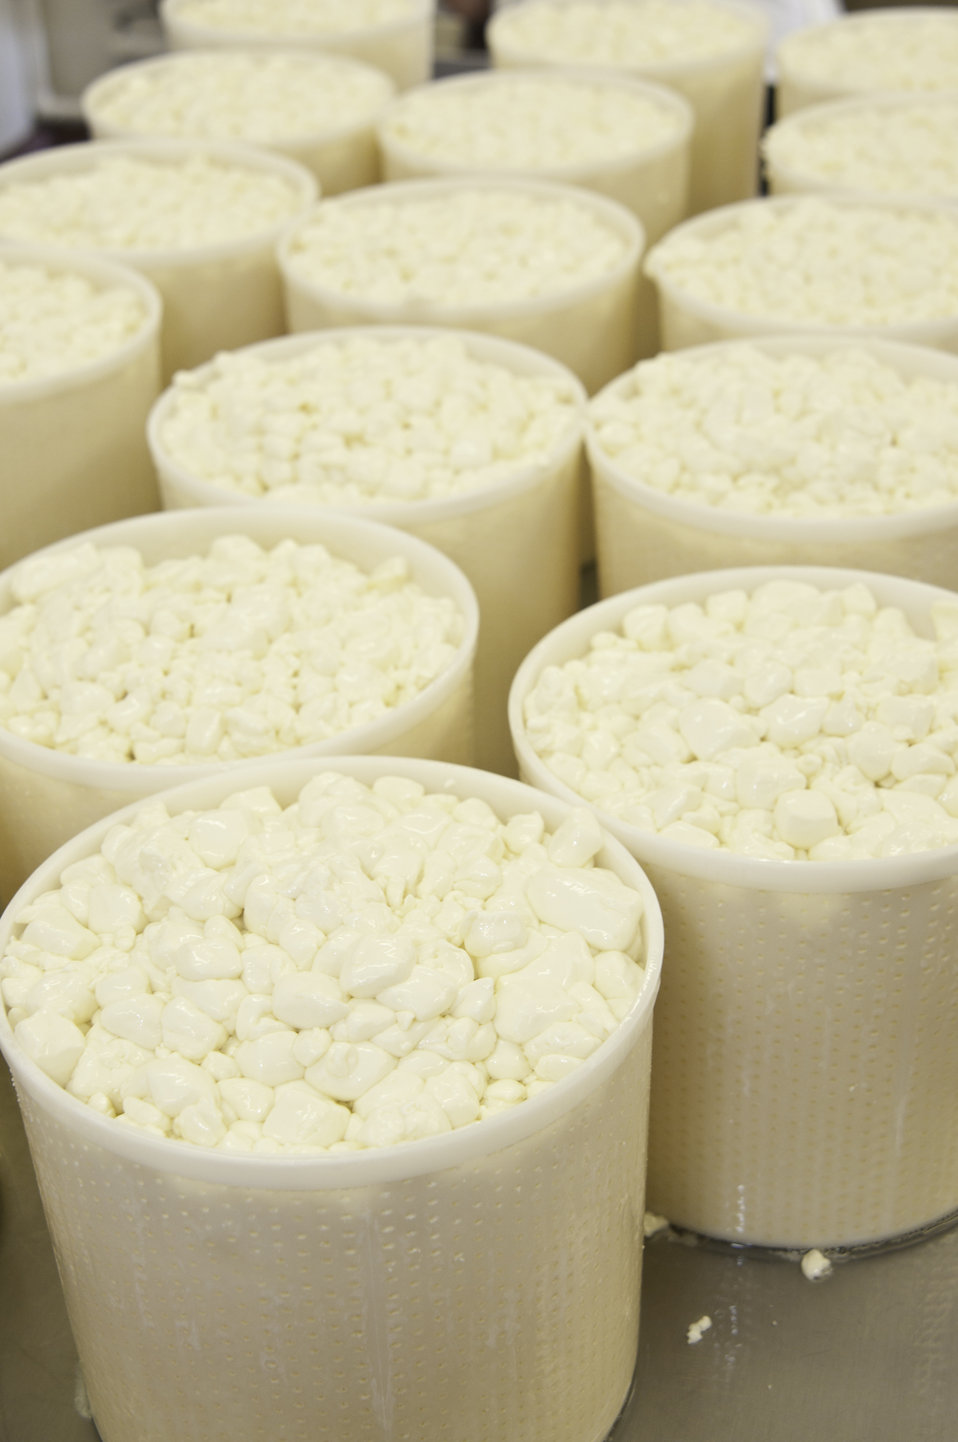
Milk curd in the hooping process at Chapel’s Country Creamery in Easton, MD, the curd will drain in the cheese hoops for 24 hours being turned during the process until the whey has drained. The cheese is then aged 60 days or longer. The dairy’s Chapelle, Talbot Reserve and Bay Blue are placed in a climate-controlled cave, which gives the cheese its unique flavor. The cave-aged cheeses develop their own natural rind.